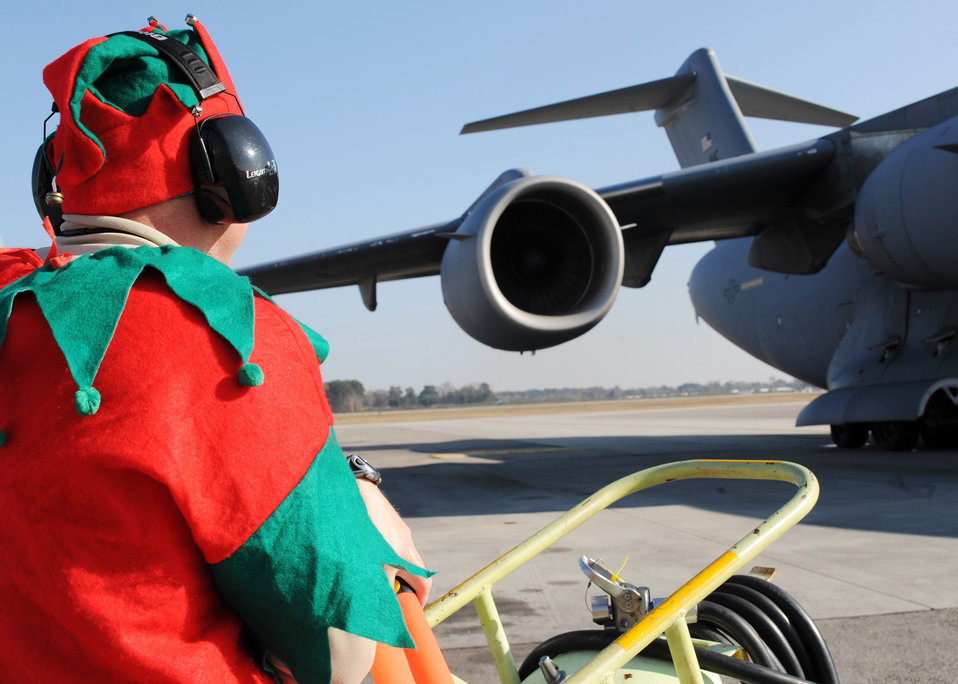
Santa Claus, friends welcome C-17

Chief Master Sgt. Derrell Wells won the 437th Aircraft Maintenance Squadron vote to dress up as an elf while marshalling a C-17 Globemaster III on the Charleston Air Force Base, S.C., Dec. 22, 2009. Chief Wells is the 437 AMXS superintendent.